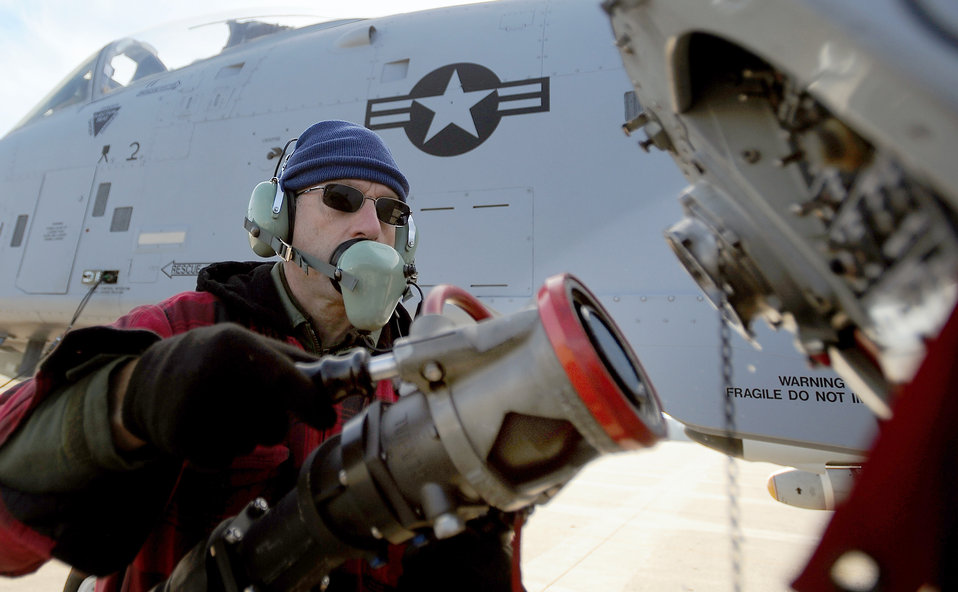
Hot pit refueling

Dewayne Magnuson, air reserve technician with the 442nd Fighter Wing, attaches a fuel hose to an A-10 Thunderbolt II during a hot pit refuel Dec. 8, 2010, at Whiteman Air Force Base, Mo. Hot pit refueling is a procedure usually performed in a combat situation to rapidly refuel aircraft while their engines are running to thrust pilots back into the fight.